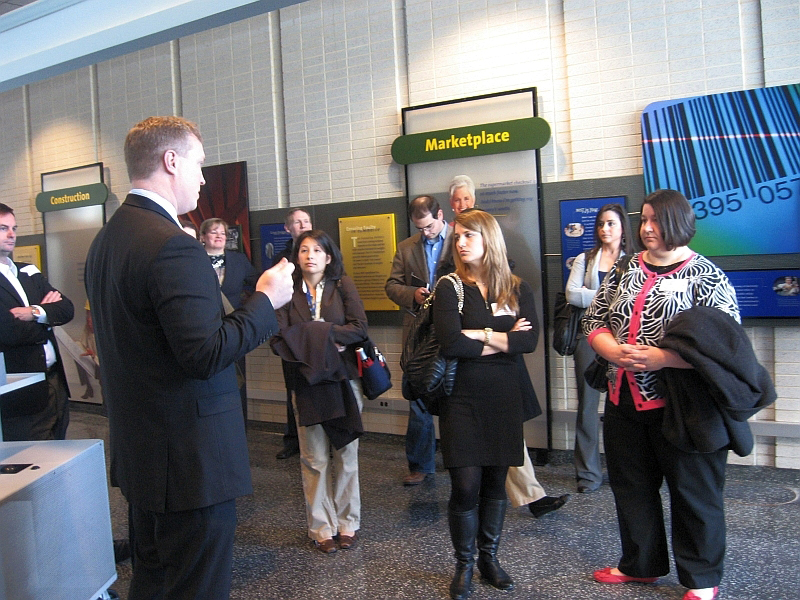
Tour

Dr. Jason Boehm, Director of the Program Coordination Office, provides an overview of NIST for House Science Committee staffers.